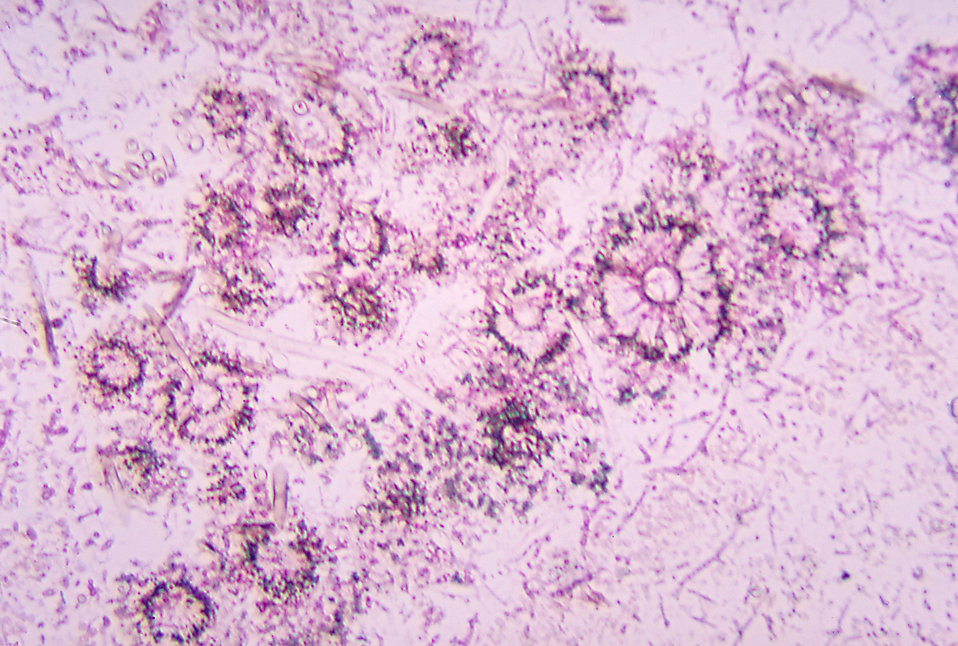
This micrograph depicts the histopathologic features of aspergillosis including the presence of conidiophore vesicles.